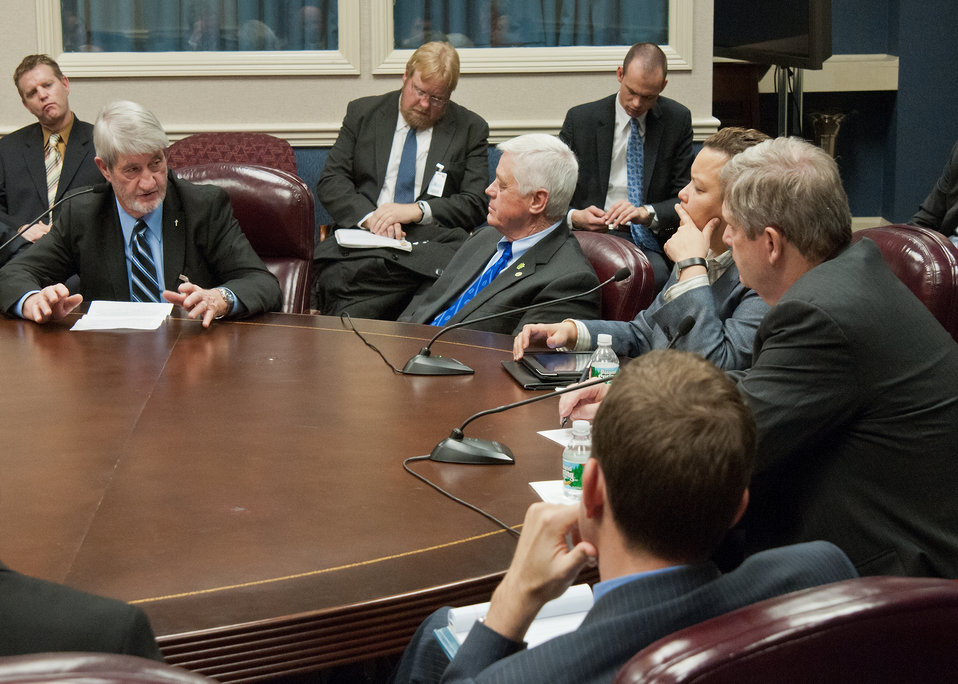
From left: Ray Vester, USA Rice Federation, Gary Niemeyer, National Corn Growers, Lisa Jackson, Administrator, Environmental Protection Agency and Agriculture Secretary Tom Vilsack. Secretary Vilsack and Administrator Jackson met with commodity groups representing all aspects of agriculture at the United States Department of Agriculture in Washington, D.C., to discuss mutual agricultural and environmental issues on Tuesday, December 14, 2011.